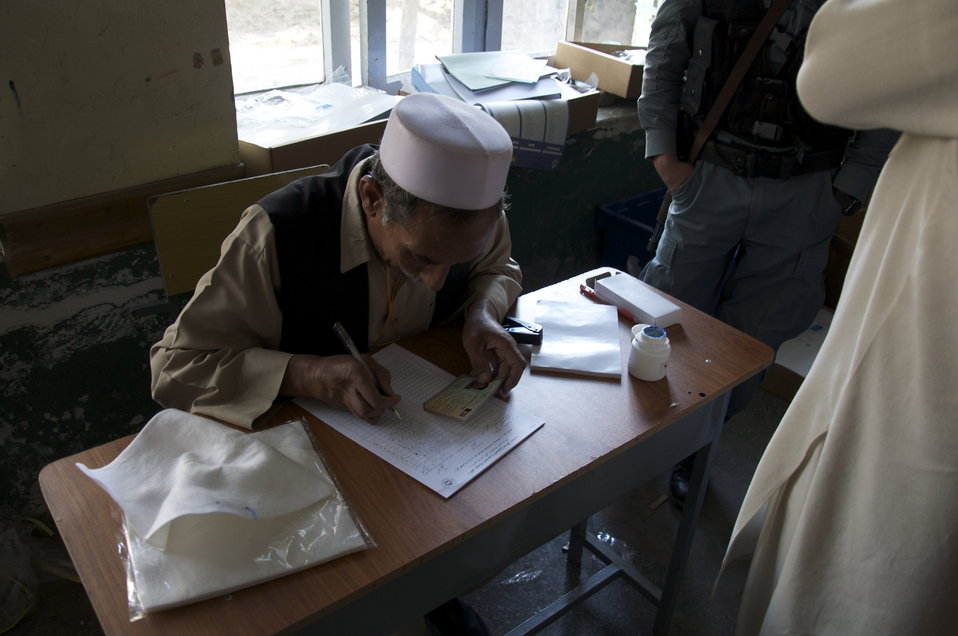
Election Worker